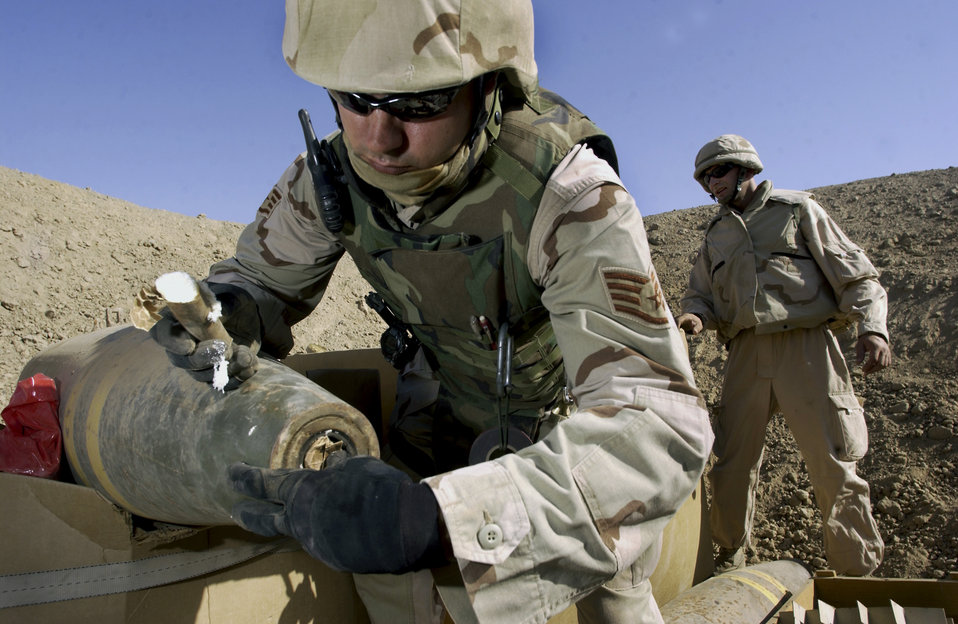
Disposing enemy ordnance

KIRKUK AIR BASE, Iraq -- Staff Sgt. Doug Baker (foreground) and Latvian navy Warrant Officer Guntars Jeromans prepare to destroy more than 180 120 mm mortar rounds. Baker carefully loads PE-4, a British plastic explosive, into a 1,000-pound